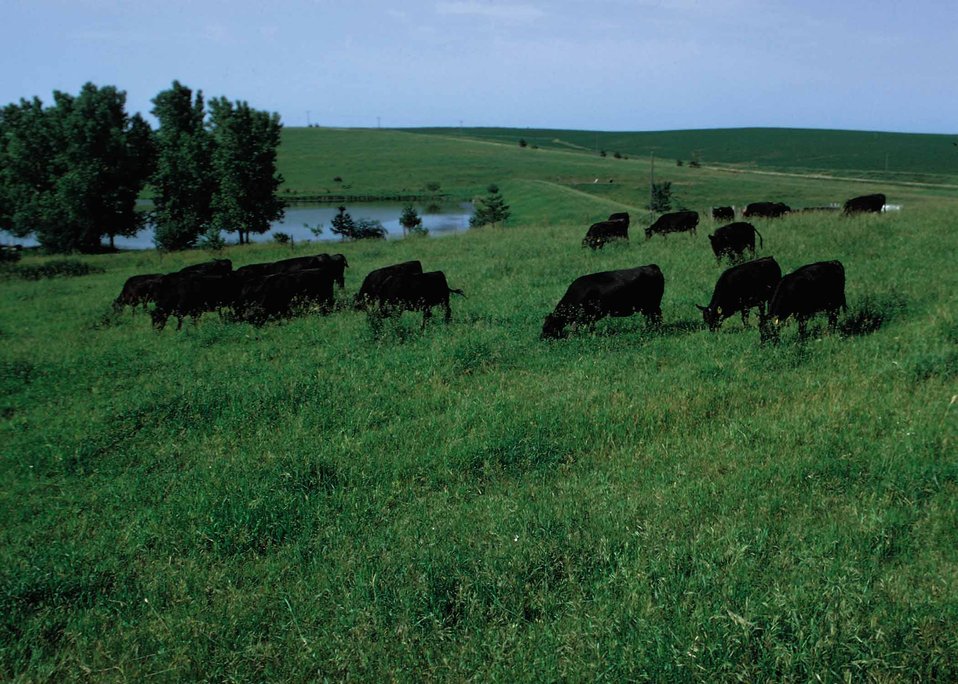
Cattle grazing on cool-season pasture that offers protection as part of a watershed project in Ida County, Iowa.